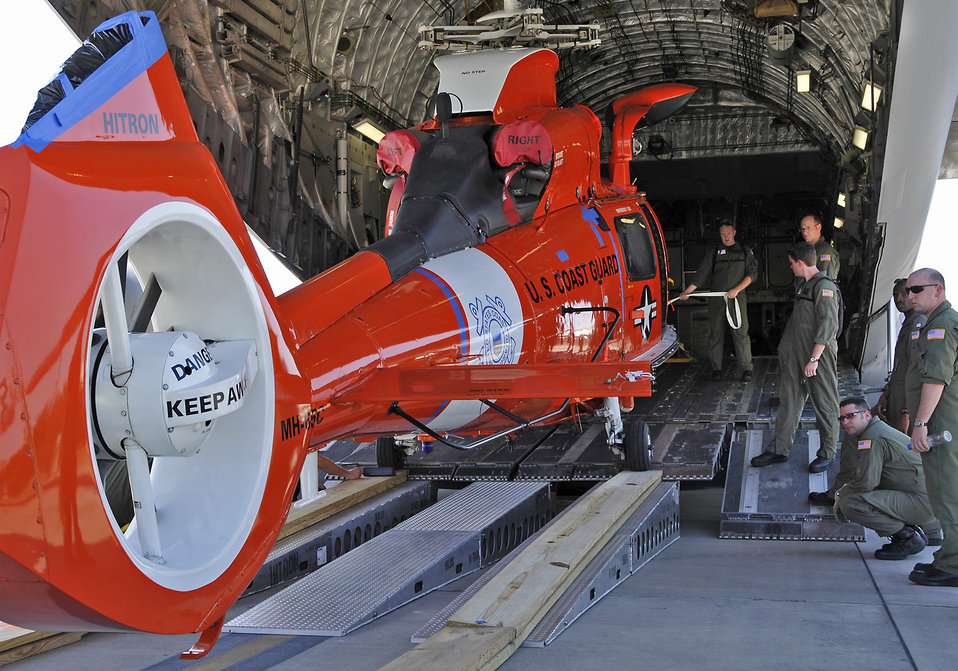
Catching a ride

An aircrew from the Air Force Reserve Command's 315th Airlift Wing loads a Coast Guard H-65 Dolphin helicopter onto a C-17 Globemaster III April 7 on the Charleston Air Force Base, S.C., flightline. The helicopter is going to Central America.